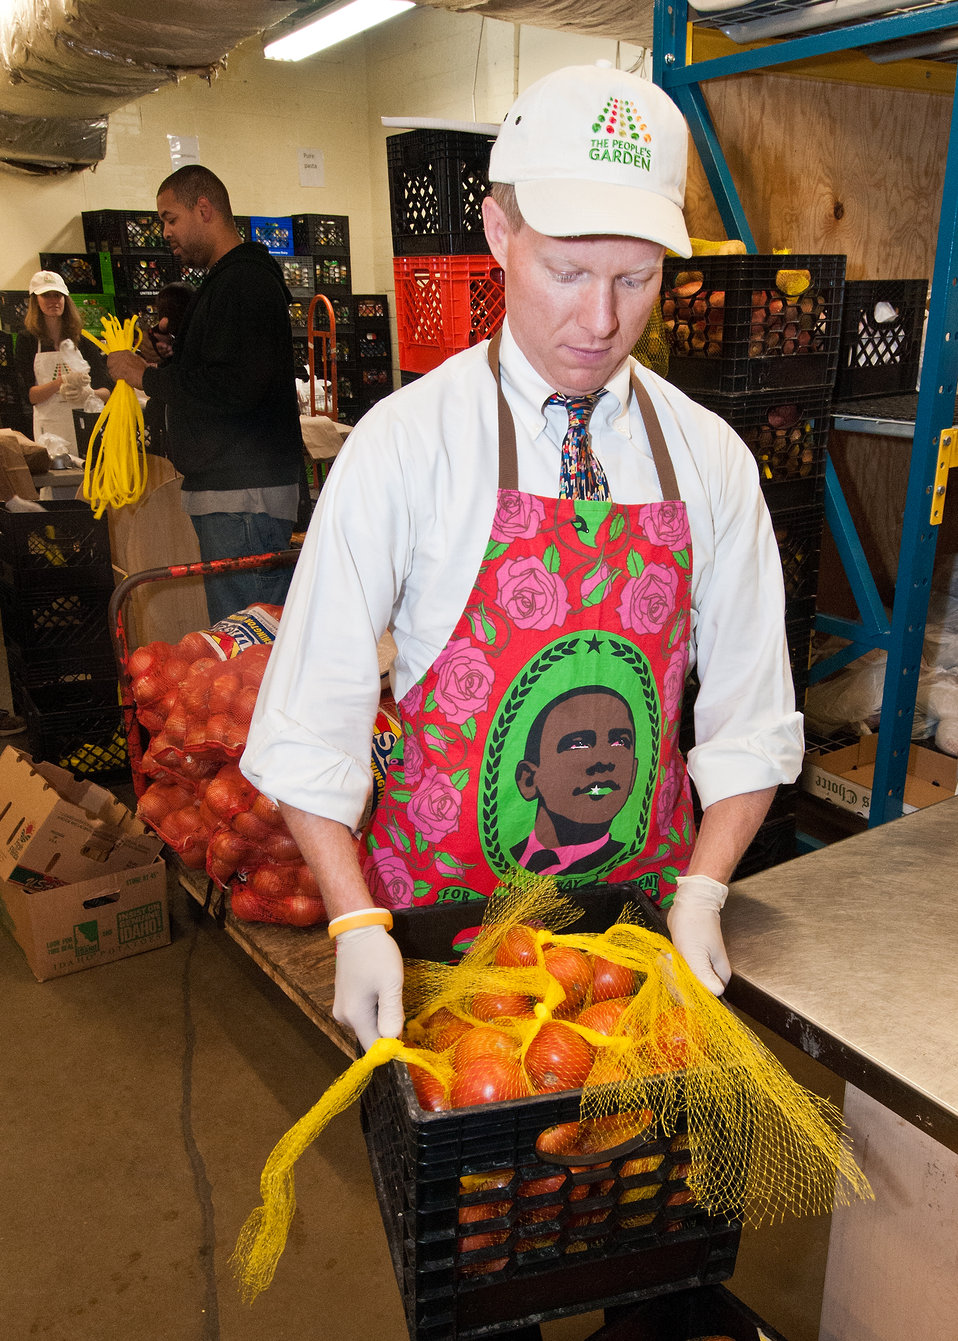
Max Finberg, Director, Center for Faith Based and Neighborhood Partnerships stacks containers of tomatoes to be distributed by the Arlington Food Assistance Center in Arlington, Virginia, on Thursday, January 12, 2012. Agriculture Secretary Tom Vilsack designated January 12 as the United States Department of Agriculture’s Martin Luther King Day of Service to recognize Dr. King’s contributions to the Civil Rights Movement. The AFAC is Arlington, Virginia’s food pantry providing supplemental and nutritious food free of charge to Arlington families who cannot afford to purchase all the food they need.